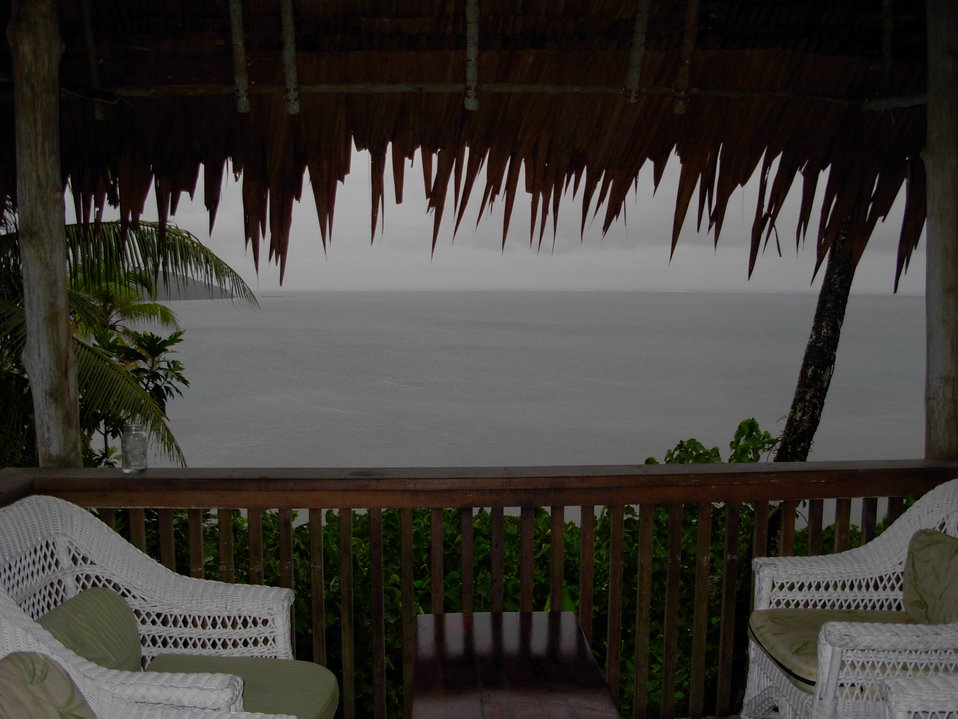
Looking out over the Pacific Ocean from the veranda of a Pohnpei restaurant.